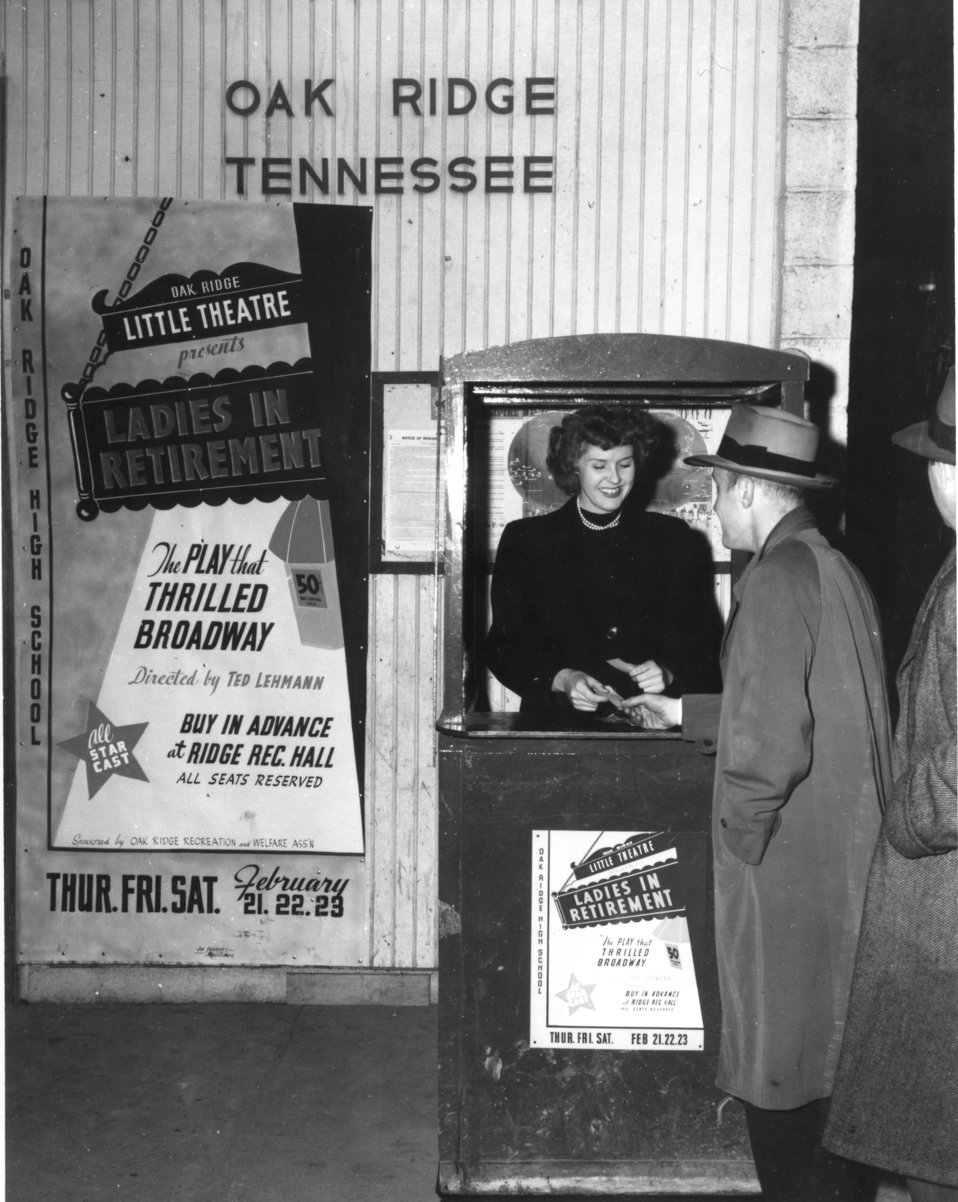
Recreation at Oak Ridge